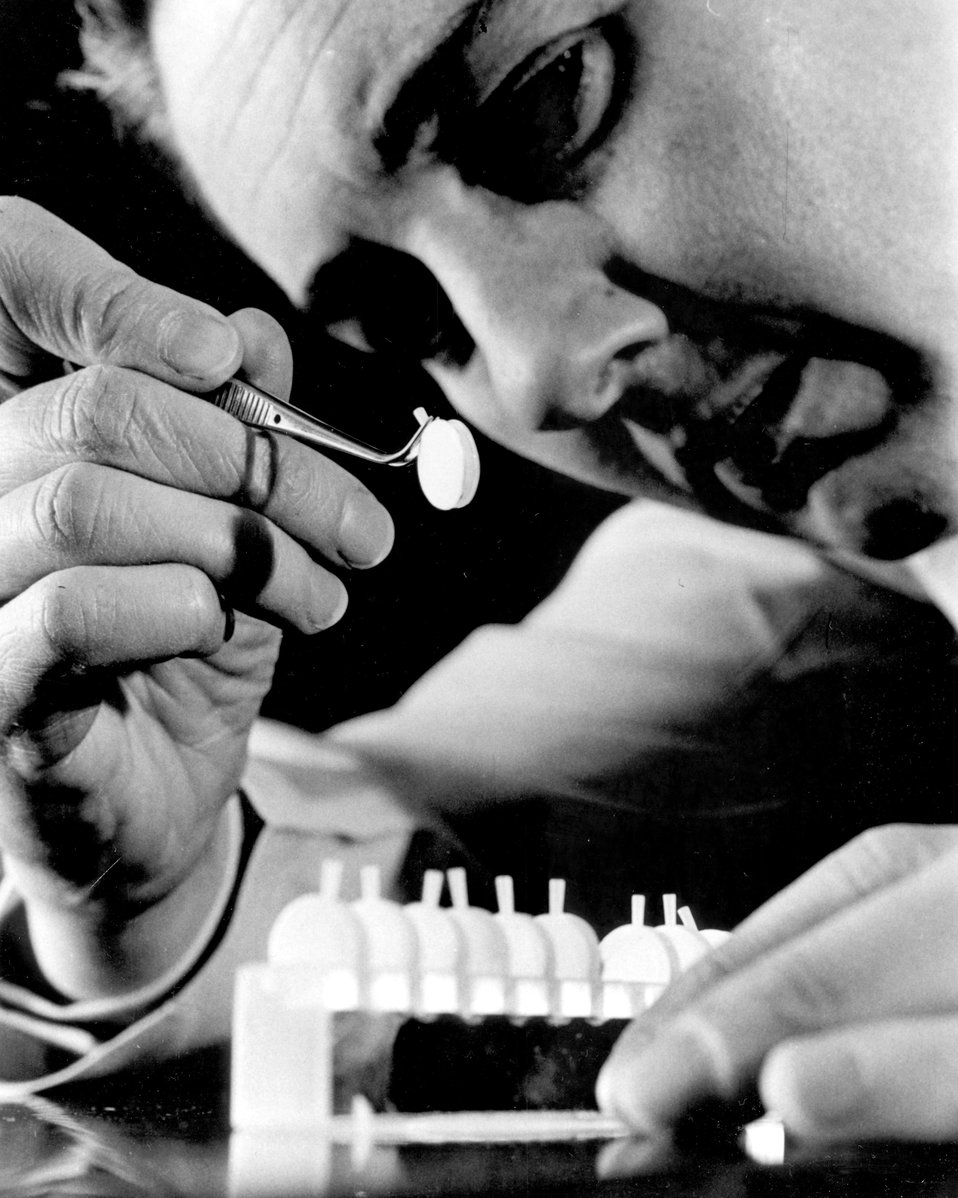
Research has made it possible to duplicate the living, continuously functioning system of human blood cell reproduction outside the human body.